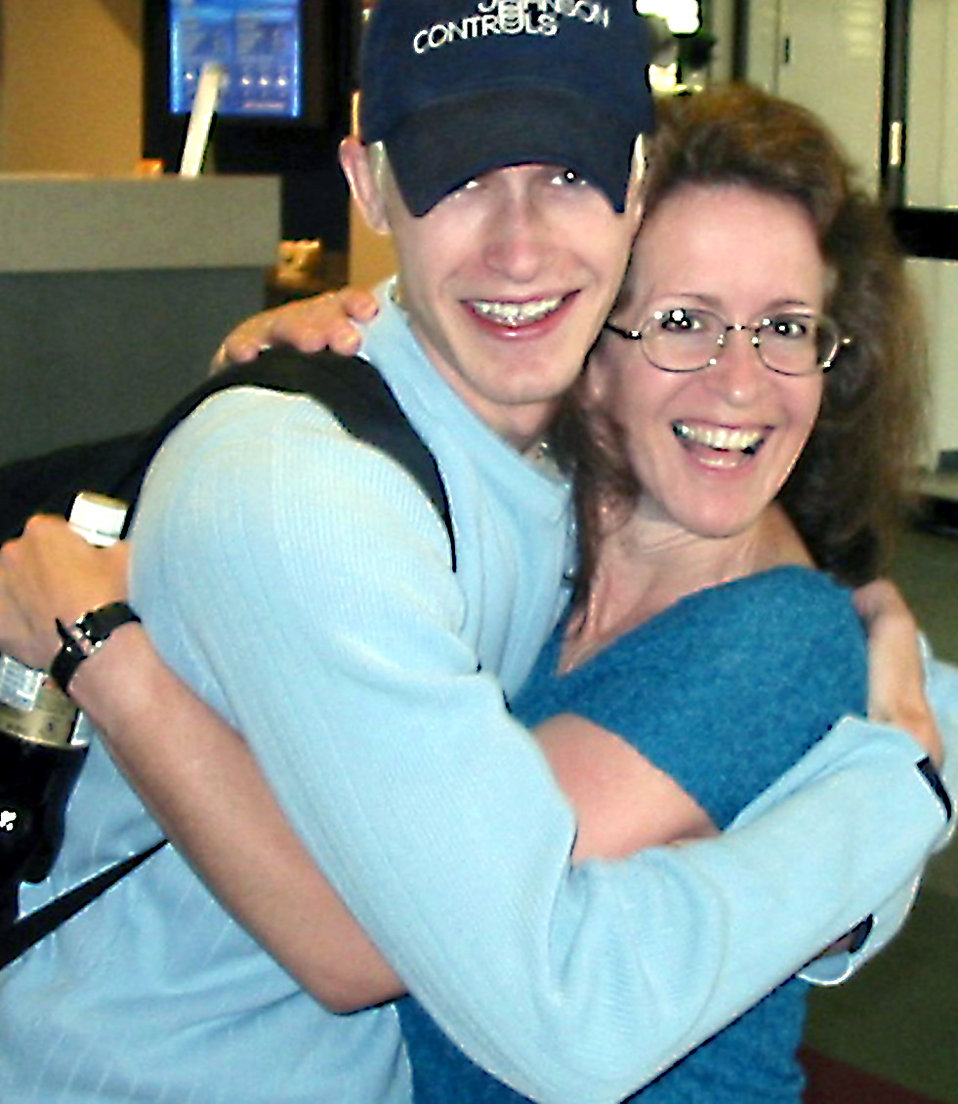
Reunited

GULFPORT, Miss. -- Maj. Betsy Majma was recently reunited here with her son, Drew, 24 years after he was placed for adoption.